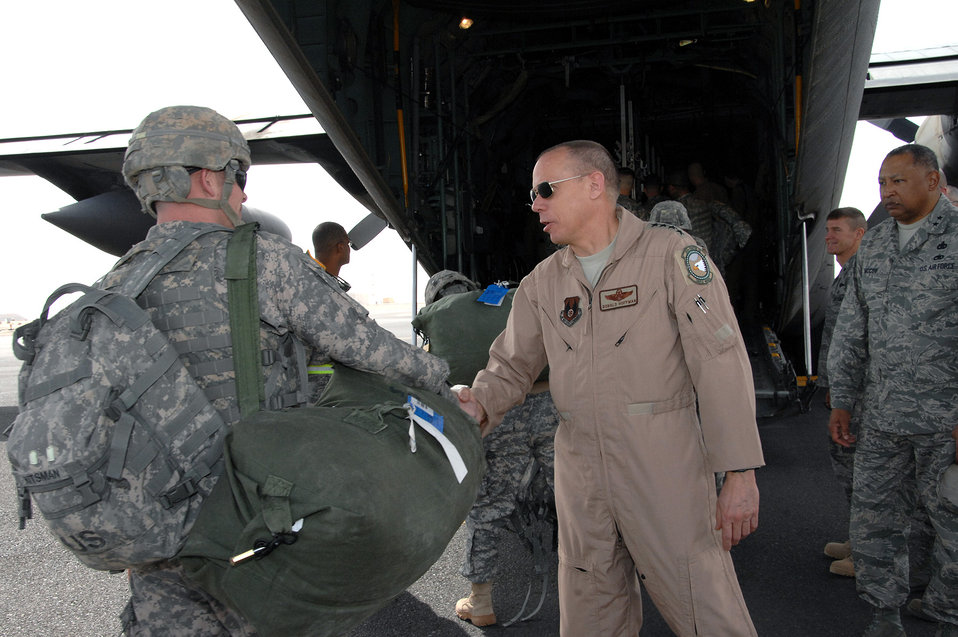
AFMC commander visits Southwest Asia

Gen. Donald Hoffman, Air Force Materiel Command commander, greets a Soldier boarding a C-130 Hercules Feb. 9 at an air base in Southwest Asia. General Hoffman visited the 386th Air Expeditionary Wing there as part of a multi-base visit in the area of operations.